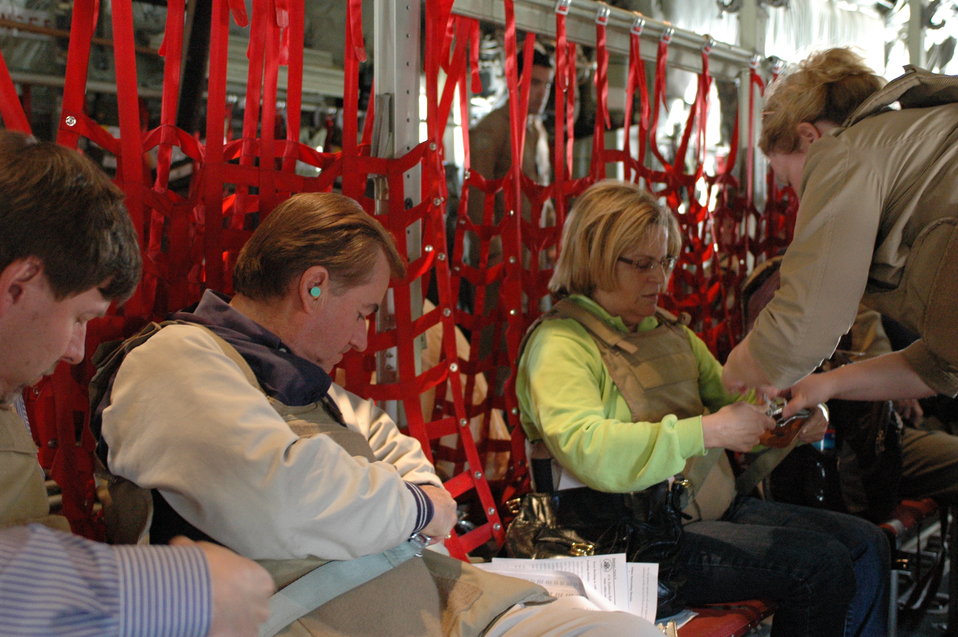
CODEL Berman